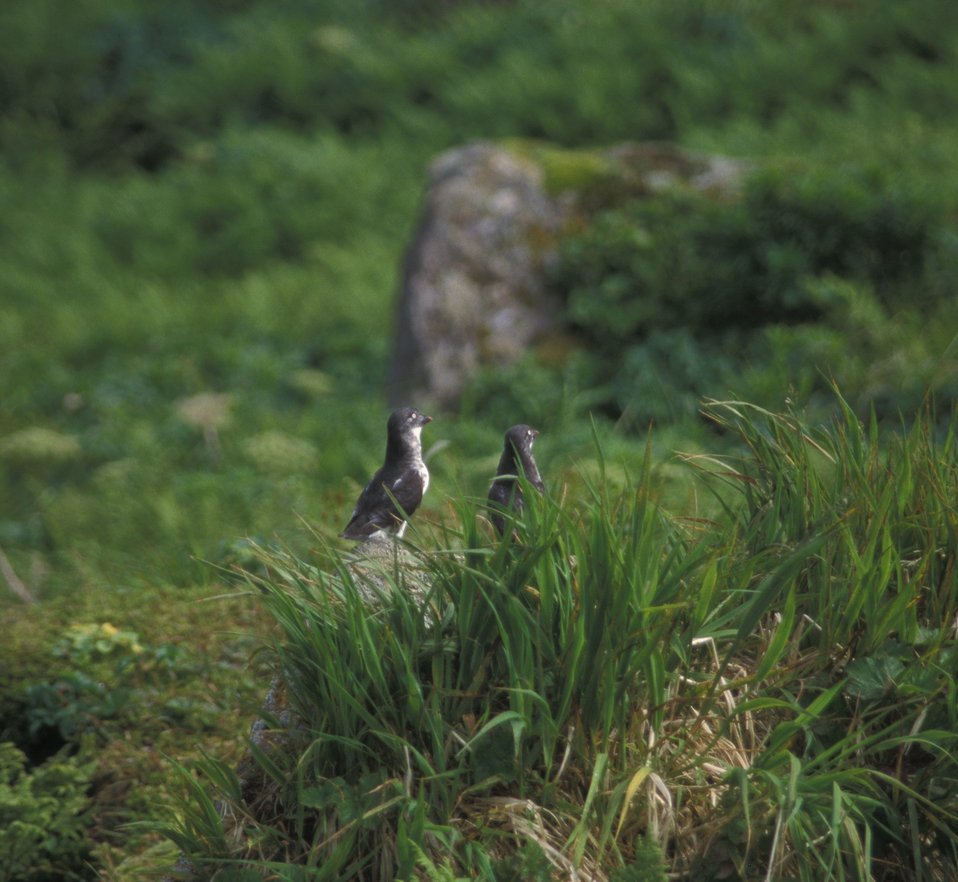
Least auklets